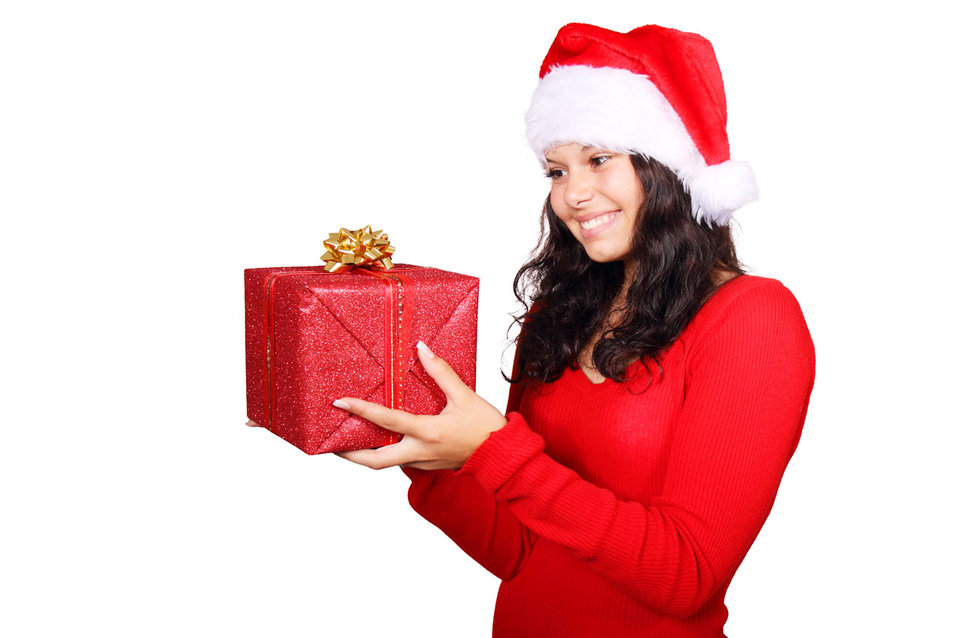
Santa looking at gift isolated on white background.